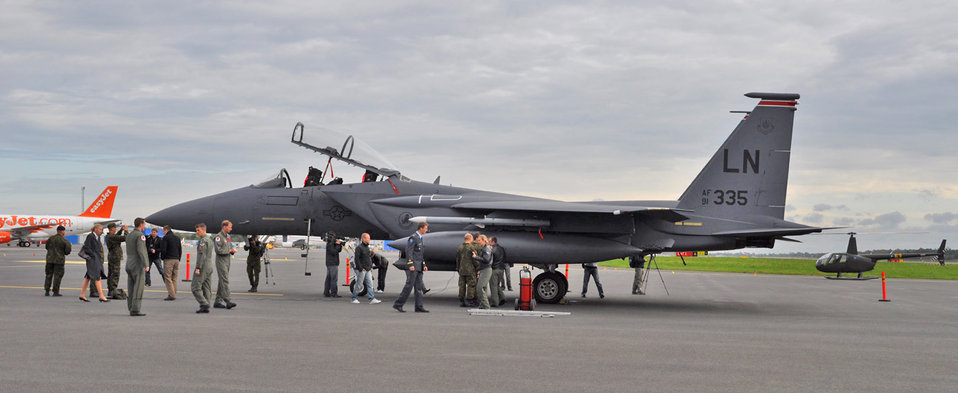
Lakenheath aircrews train with Estonian forward air controllers

An F-15E Strike Eagle sits on the ramp Sept. 15, 2009, at Tallinn International Airport, Estonia. The fighter is from the 494th Fighter Squadron from Royal Air Force Lakenheath, England. F-15E aircrews trained with Estonia forward air controllers